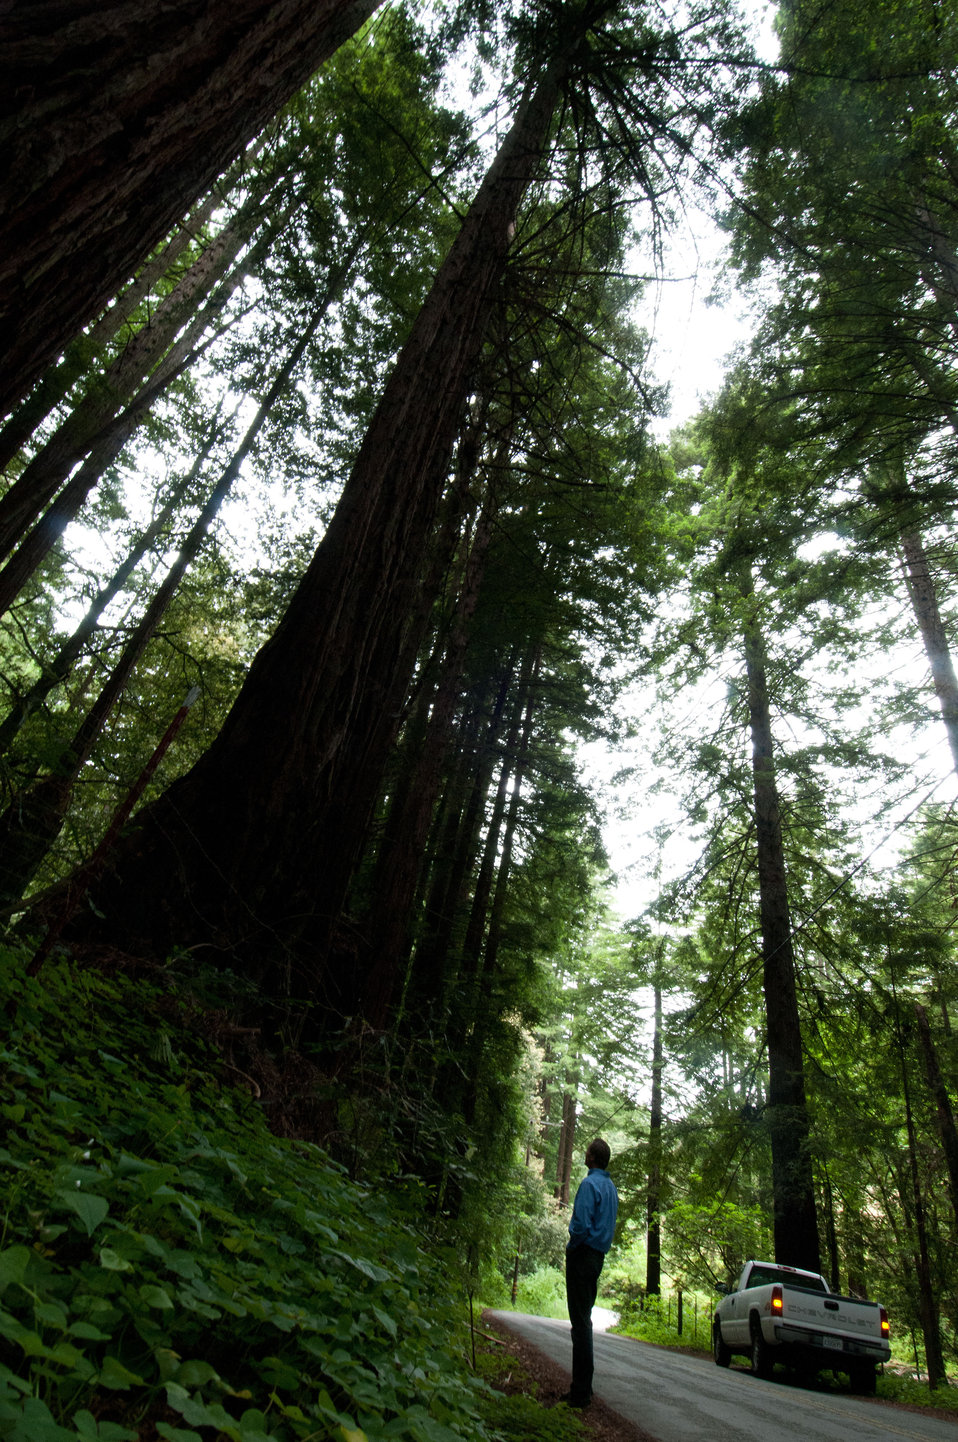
Cathedral growth redwood trees in a private forest in Santa Cruz County, CA, on Friday, June 17, 2011. Cathedral trees are a group of redwoods that grow in a circle around a host stump or tree, from which they sprouted. Assisting landowners when they want help in the management of their private forest is a factor in the America’s Great Outdoors Initiative (AGO).